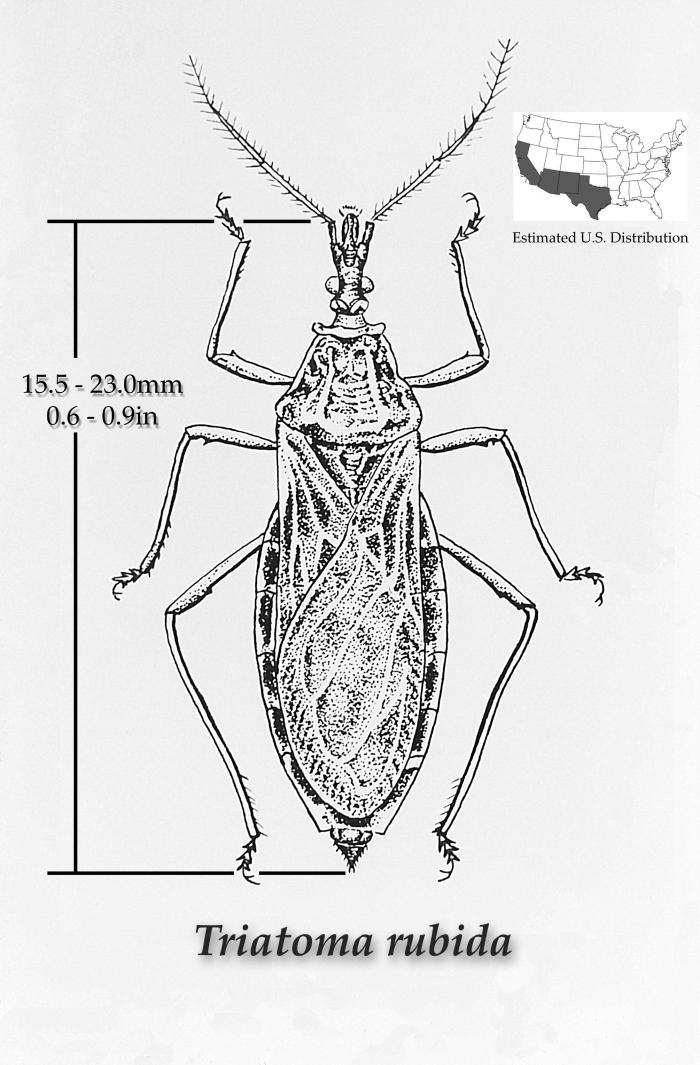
This illustration depicts a dorsal view of the 'kissing bug', Triatoma rubida.